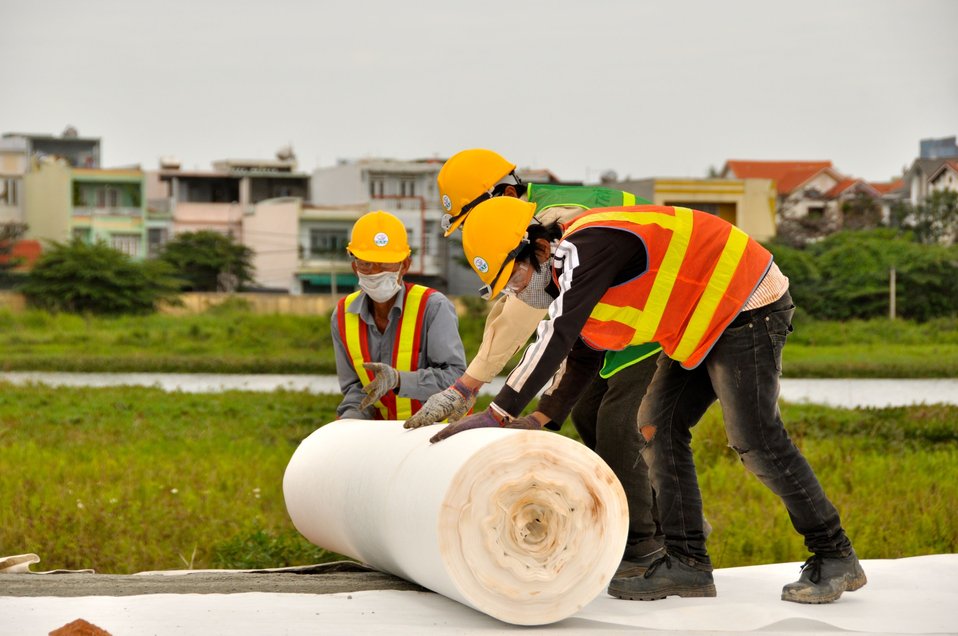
Site Preparation for Environmental Remediation of Dioxin Contamination at Danang Airport

Danang Airport, January 22, 2013